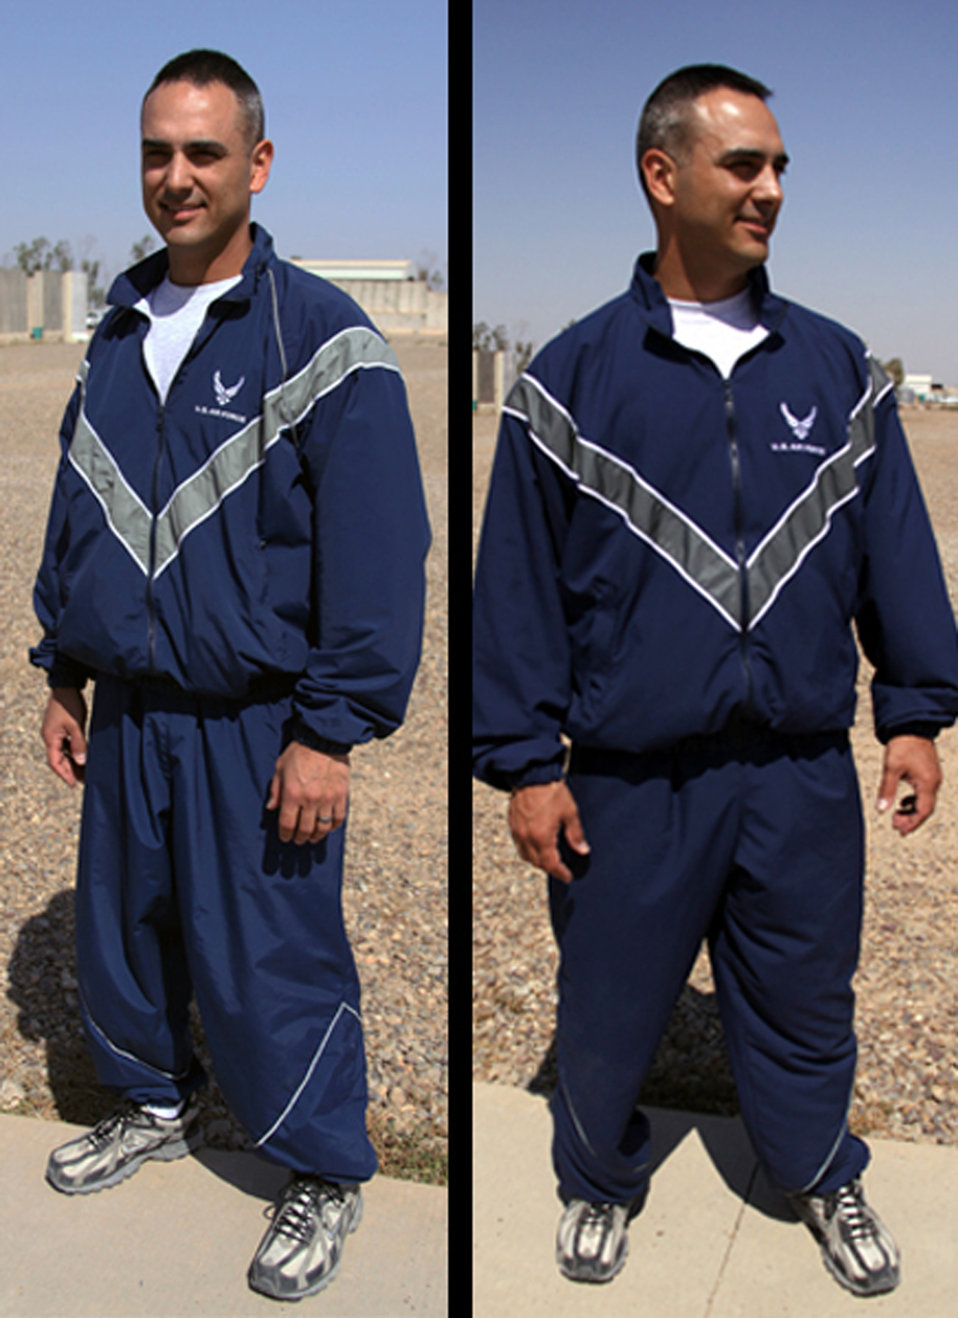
Airman field-tests modified PT uniform in Iraq

Senior Airman James Debiase models the current physical training uniform (left) and the modified PT uniform (right) April 13 at Joint Base Balad, Iraq. Airman Debiase was selected to field-test the PT uniform while deployed here from Dyess Air Force Base, Texas, and to provide feedback to leadership at the end of April. Airman Debiase is a 332nd Expeditionary Civil Engineer Squadron emergency manager, and his hometown is Glastonbury, Conn.